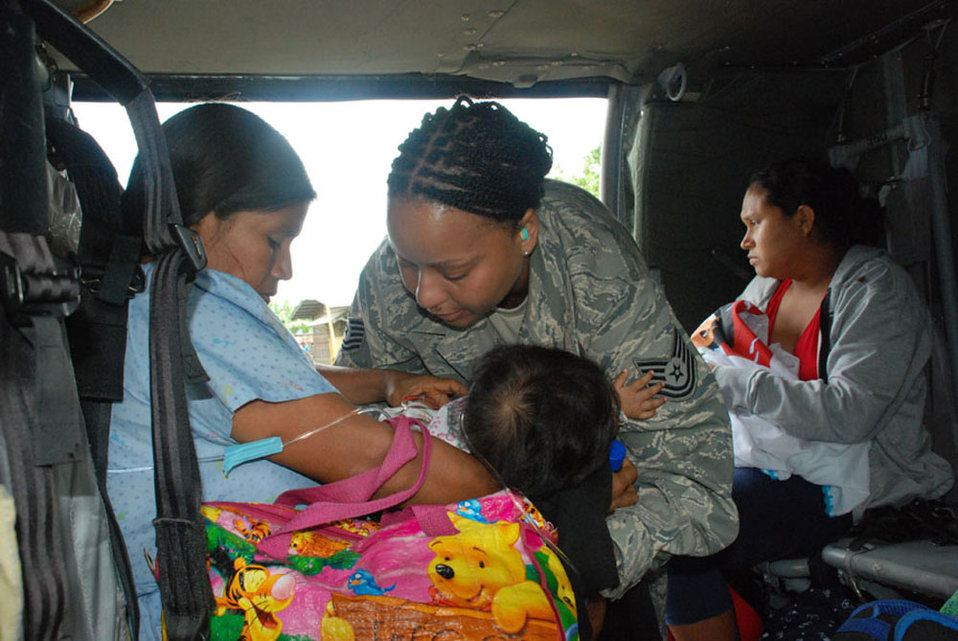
U.S. troops help flood victims in Central America

Tech. Sgt. Tracy Fletcher secures a 7-month-old baby and her mother in the seat of a UH-60 Black ?Hawk helicopter Nov. 26 at Las Tablas, Panama. Both were victims of flooding in the region. The baby was suffering ?from severe dehydration, but her mother was unable to take her to a hospital because of flooded ?roads. The Joint Task Force-Bravo helicopter transported the baby and five other patients from a remote ?airfield to an airport where an ambulance met the patients and transported them to a local ?hospital. Sergeant Fletcher is a JTF-Bravo emergency ?medical technician. ???